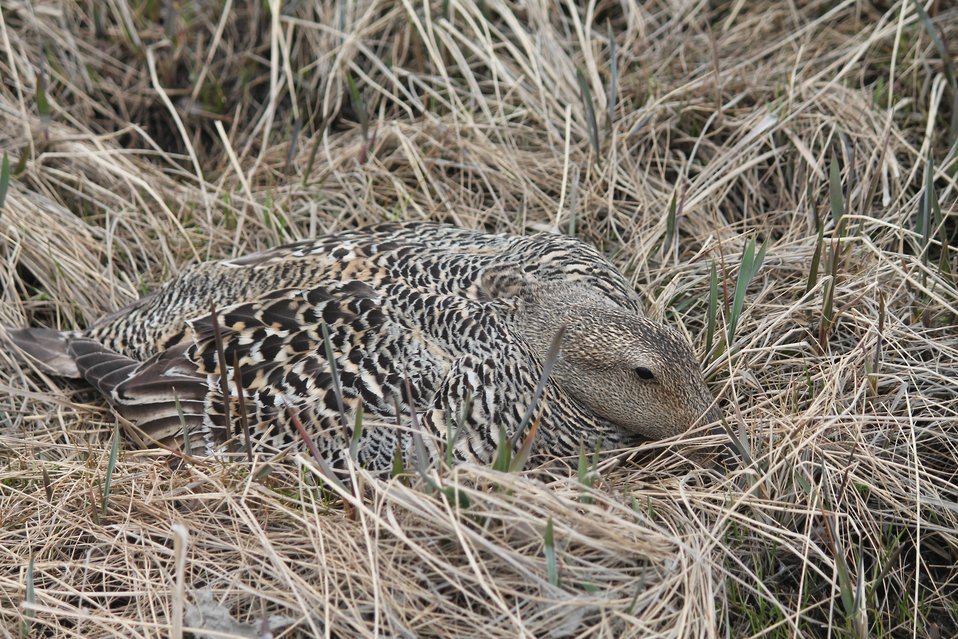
Common Eider Incubating

Common Eiders are another sea duck that is monitored on Yukon Delta NWR, on Kigigak Island. This female is very attentive.

USFWS Yukon Delta NWR